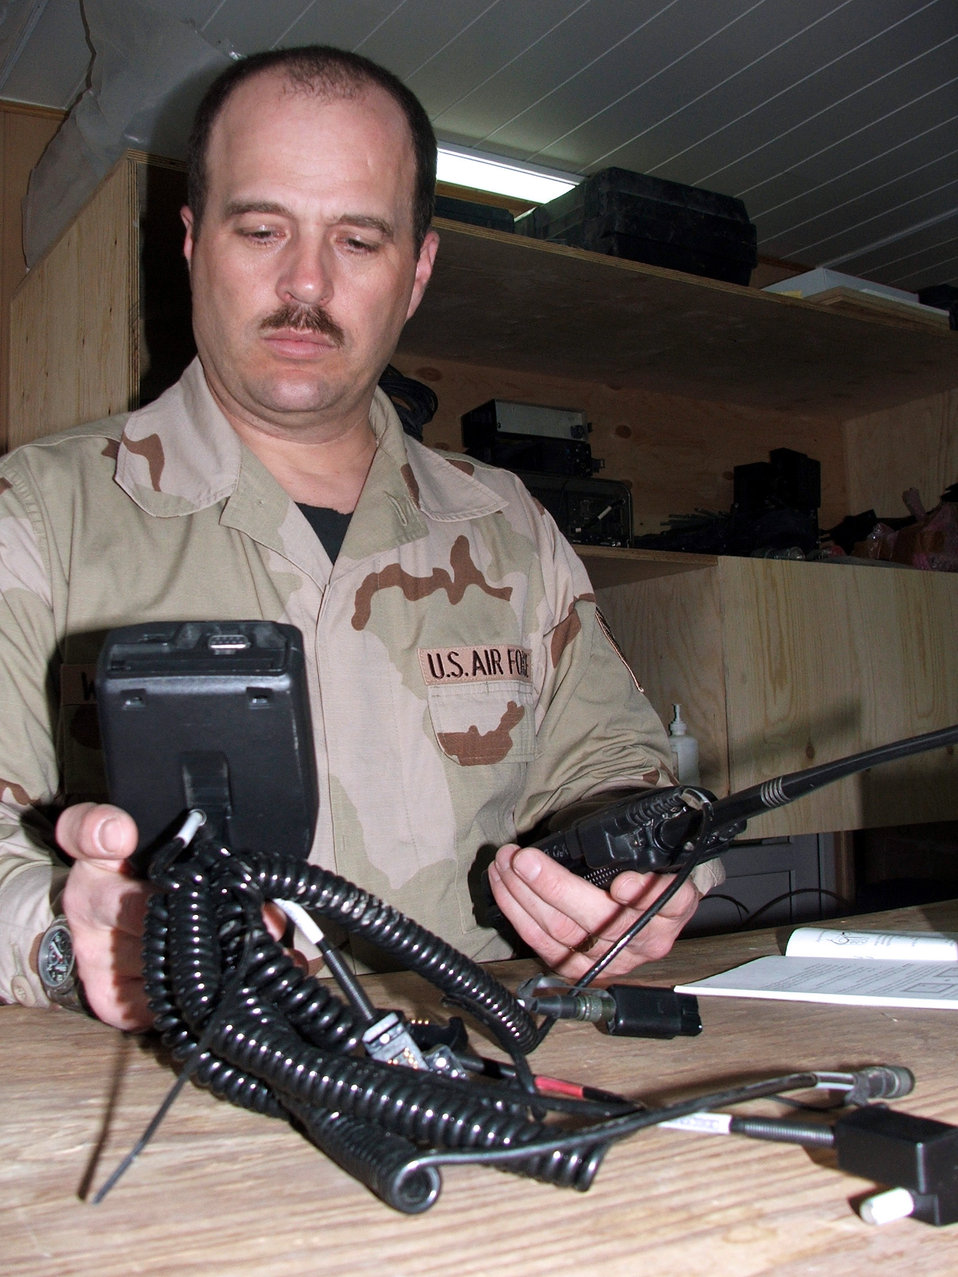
Combat communicators provide more than 'terabyte' of support

KARSHI-KHANABAD AIR BASE, Uzbekistan -- Tech. Sgt. Kerry Westerfield tests a radio here March 15. He is the noncommissioned officer in charge of personal wireless communications for the 416th Expeditionary Mission Support Squadron communications flight and is deployed from Travis AFB, Calif.